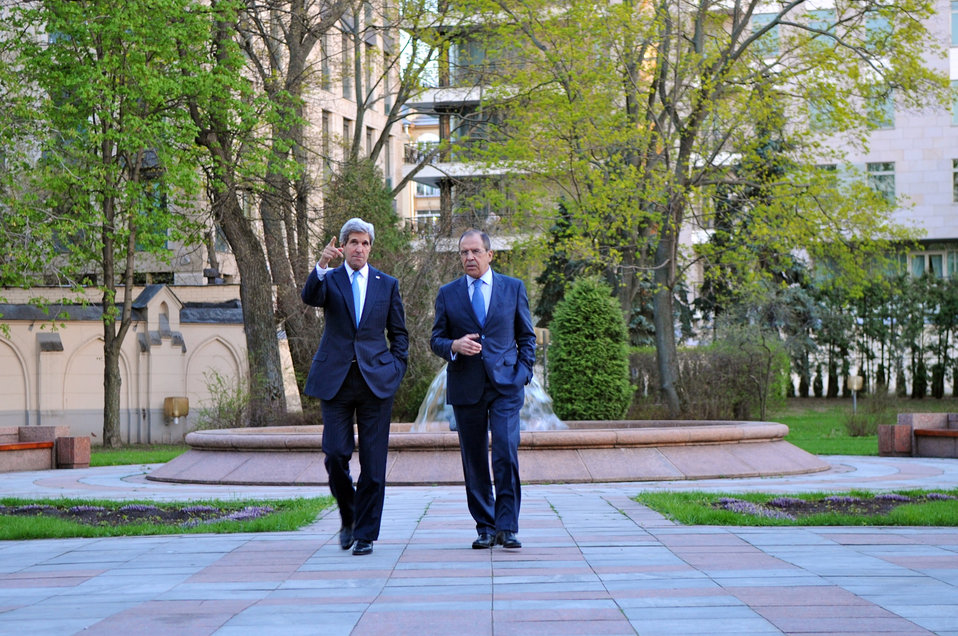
Secretary Kerry and Russian Foreign Minister Lavrov Walk and Talk

U.S. Secretary of State John Kerry and Russian Foreign Minister Sergey Lavrov walk and talk in the backyard of the Russian Ministry of Foreign Affairs' Guesthouse Osobnyak in Moscow, Russia, on May 7, 2013.